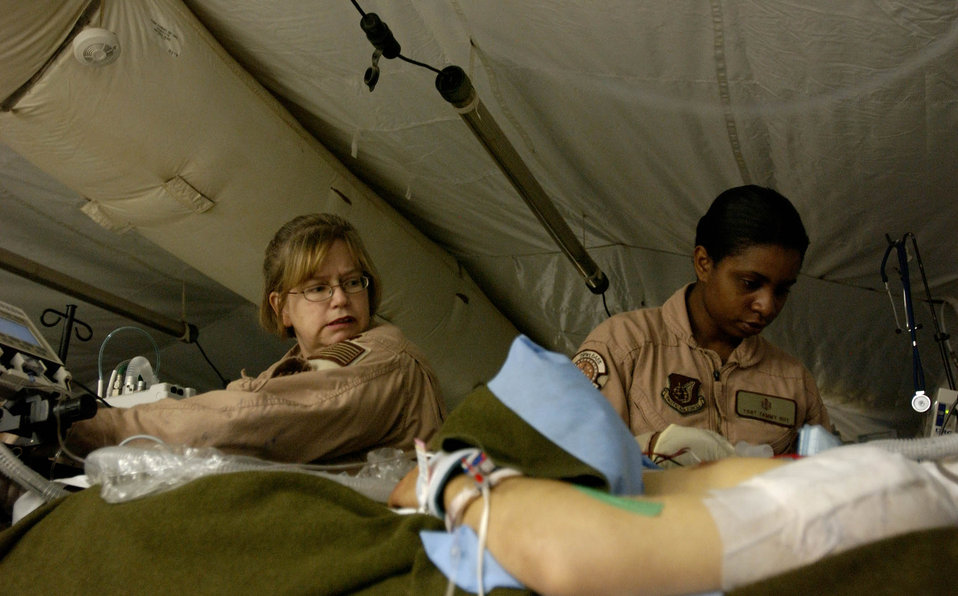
Intensive care in the air

BALAD AIR BASE, Iraq -- Maj. Kathleen Browning (left) and Tech. Sgt. Tammy Shy prepare a patient for medevac flight to Germany from the Air Force Theater Hospital intensive care unit here. Sergeant Shy, a respiratory technician, and Major Browning, a nurse, are part of a three-person critical-care air-transport team from Ramstein Air Base, Germany. They are deployed from the 374th Medical Squadron at Yokota AB, Japan.